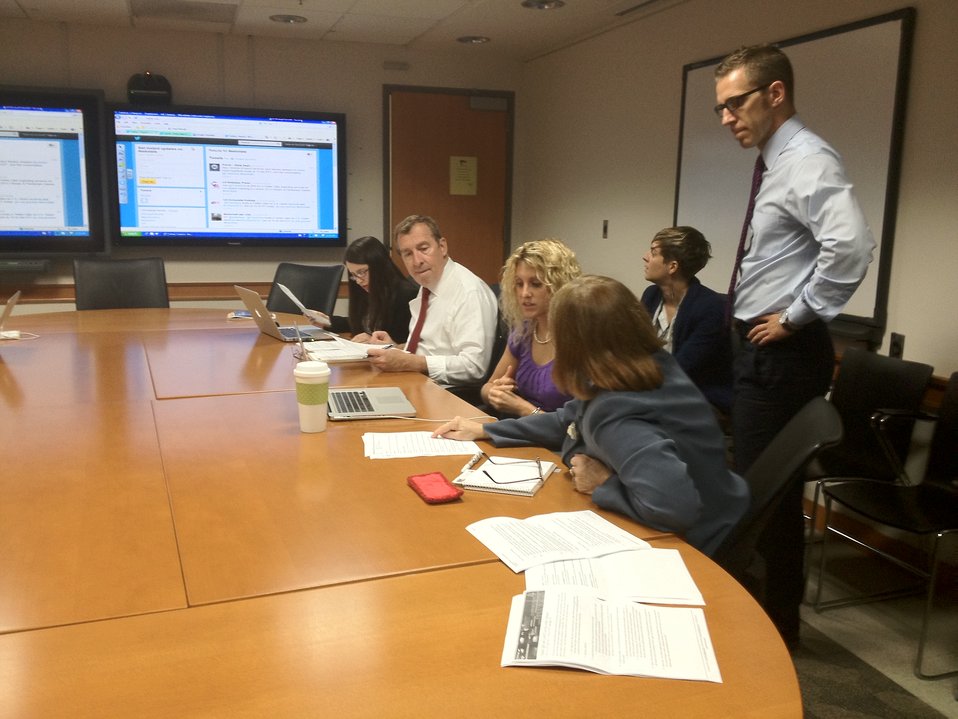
Deputy Director Markey Responds to Questions During a Twitter QandA

Deputy Director of American Citizen Services for the U.S. Department of State's Bureau of Consular Affairs Jack Markey responds to questions from American citizens traveling to the 2012 London Olympics during a Twitter Q&A on July 11, 2012.